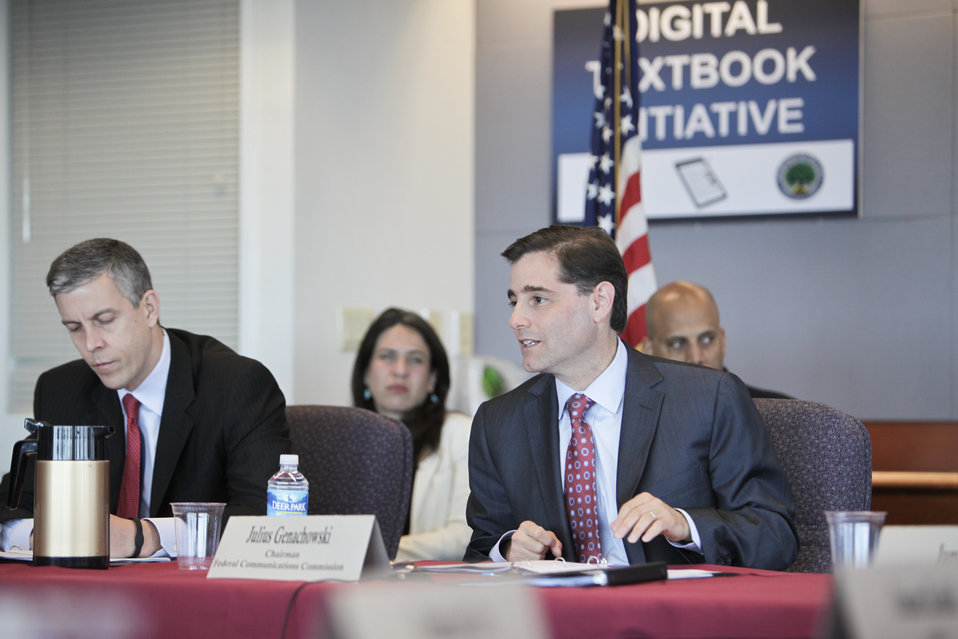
FCC Chairman Host Leaders From the Digital Education Ecosystem

U.S. Education Secretary Arne Duncan and FCC Chairman Julius Genachowski speaks about adoption of digital textbooks at FCC's HQ in Washington, DC on March 29, 2012.